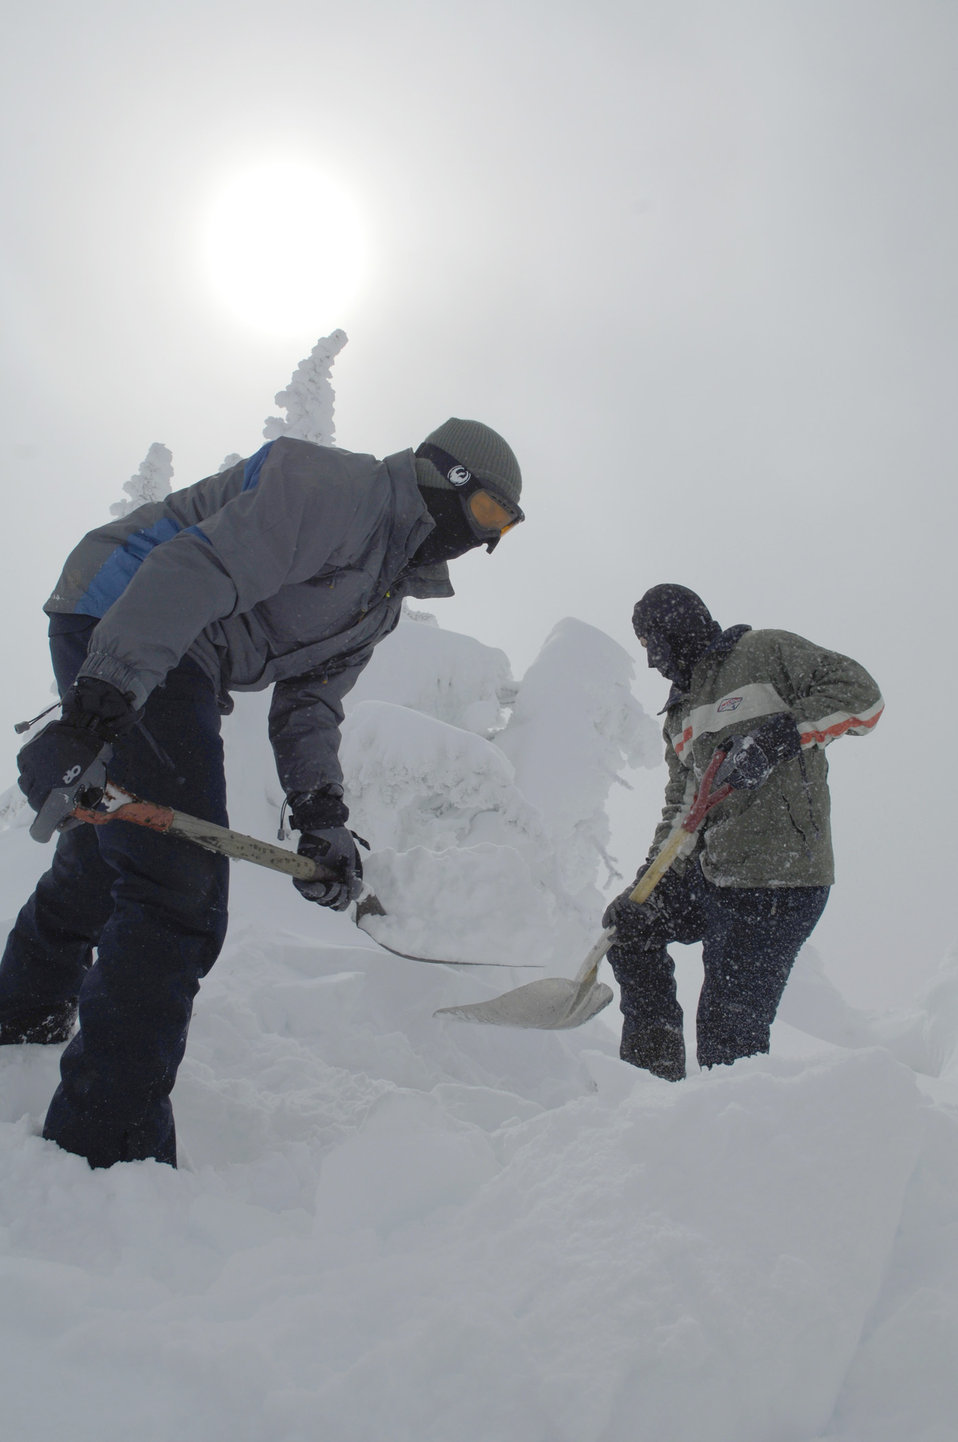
Fairchild Airmen climb ice-covered tower to retain communications

Airmen 1st Class Shawn Westbrook and Miklos Jeszensky shovel snow to make a drivable path to a radio tower covered with snow and ice Feb. 16, 2011, at the top of the Calispell Mountain Peak in Spokane, Wash. Both Airmen are transmission systems radio technicians with the 92nd Communications Squadron at Fairchild Air Force Base, Wash., and are traveling to the radio tower to knock snow and ice off it. Deicing the tower clears radio signals vital to life-saving missions done by the 336th Training Group's rescue flight. The Airmen began digging this path when their vehicle got stuck a quarter mile away from the tower.